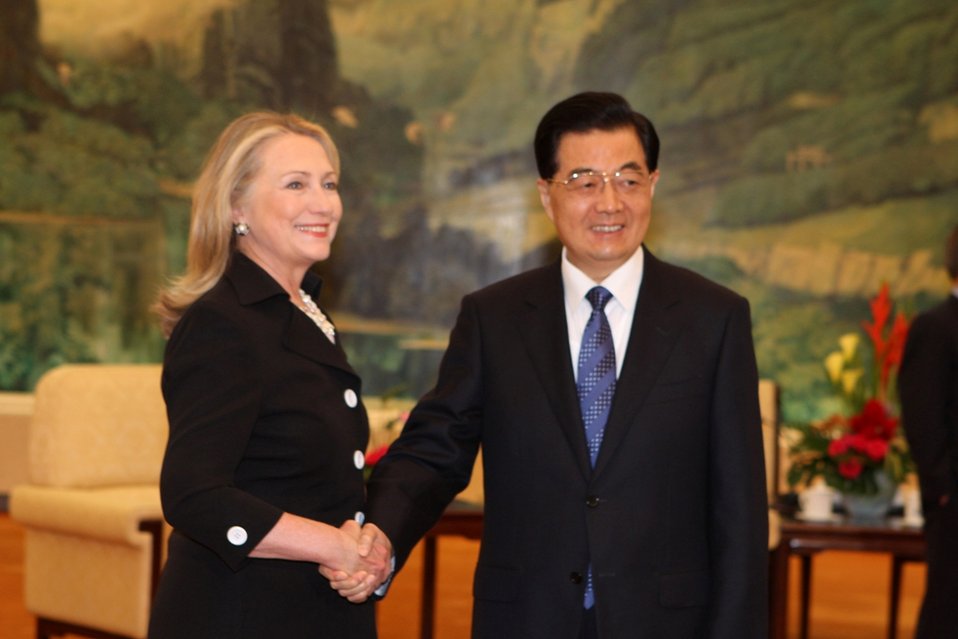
Secretary Clinton Meets With Chinese President Hu Jintao

U.S. Secretary of State Hillary Rodham Clinton is greeted by Chinese President Hu Jintao at the Great Hall of the People in Beijing, China, September 5, 2012.